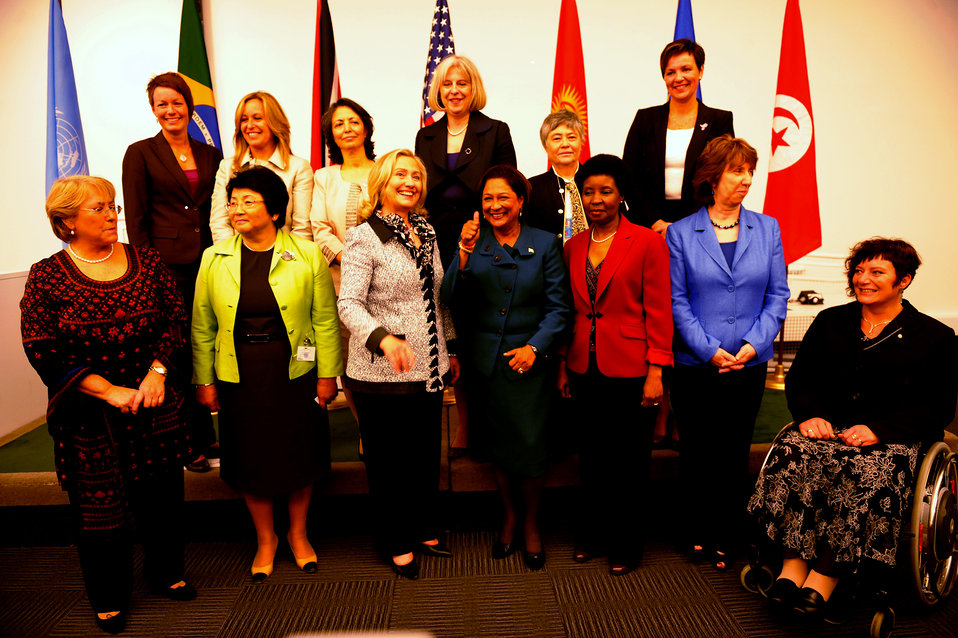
Secretary Clinton Delivers Remarks at an Event Hosted By UN Women on Women’s Political Participation

U.S. Secretary of State Hillary Rodham Clinton delivers remarks at an event hosted by UN Women on Women’s Political Participation, at the United Nations in New York, New York, on September 19, 2011.